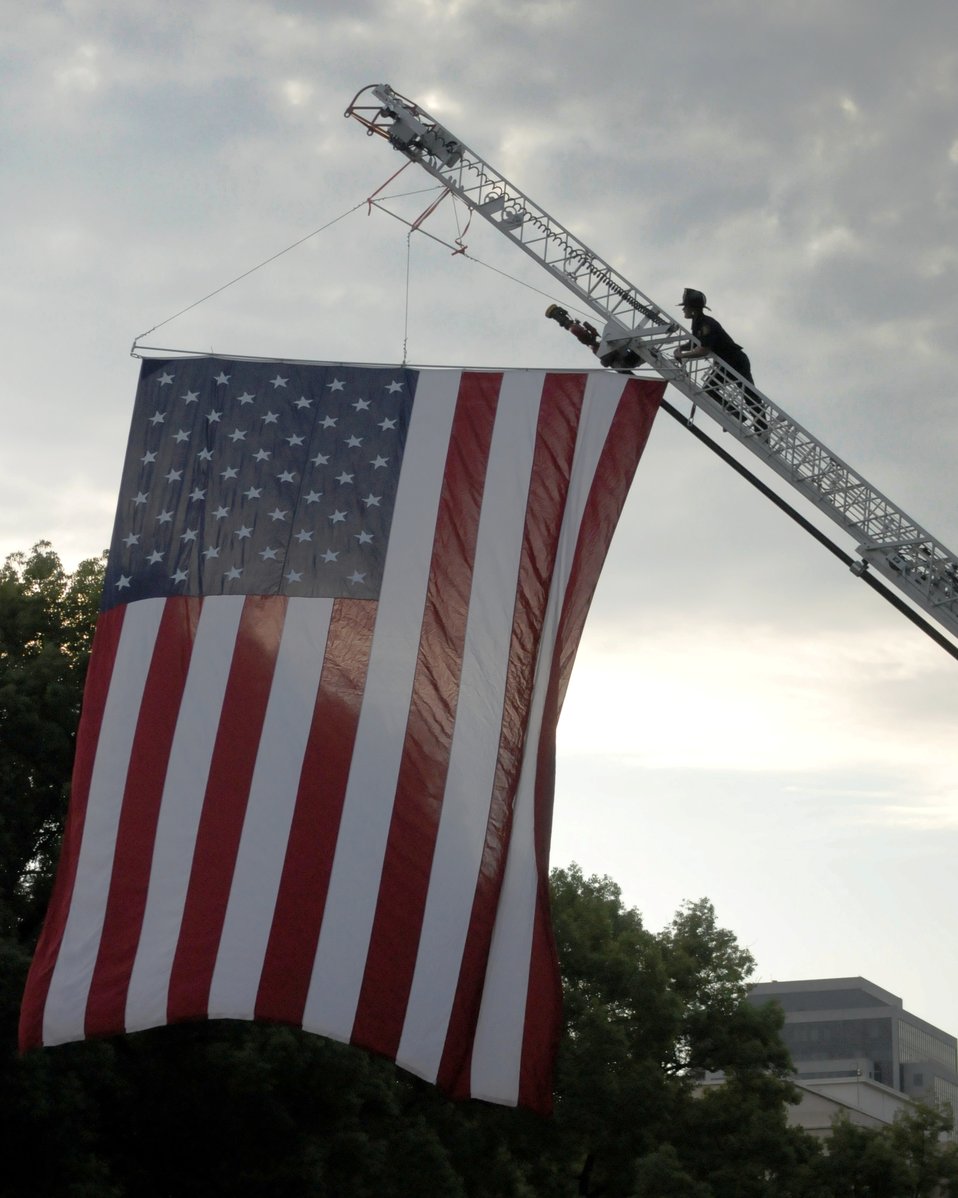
Sacramento firefighter honors the fallen

A Sacramento Metropolitan Fire District firefighter ensures the American flag will hold strong against the evening breeze during a 9/11 tenth anniversary vigil of honor and remembrance at the steps of the California State Capitol in Sacramento, Calif.